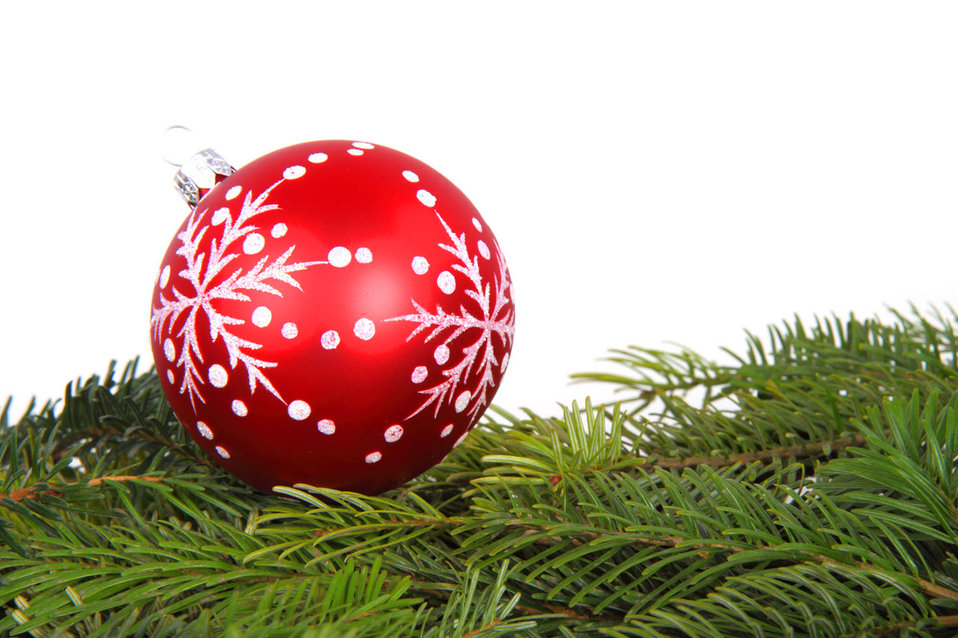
Christmas bauble and green branches

Red christmas bauble with green tree branches as a background.